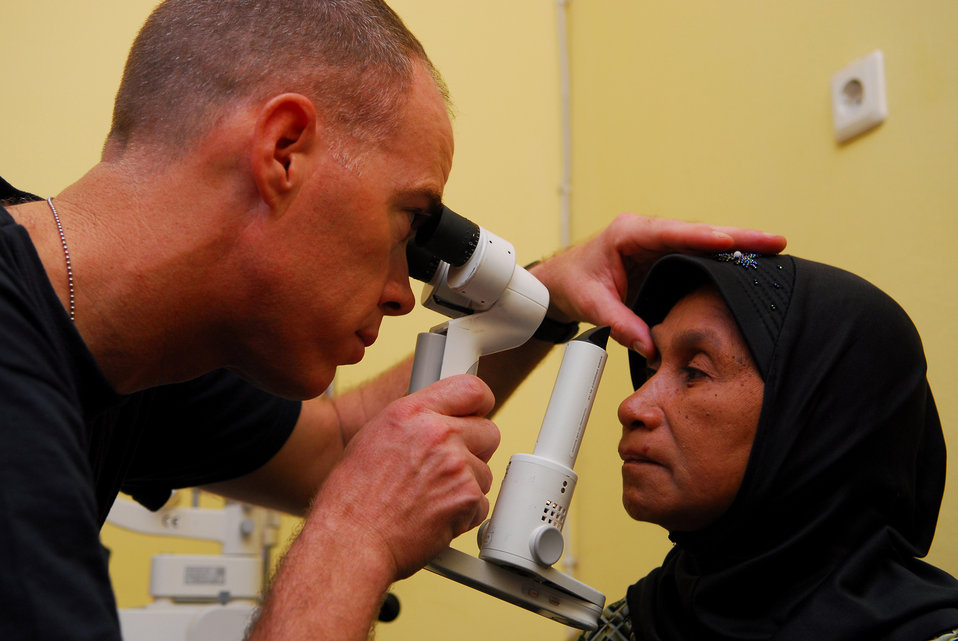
Cmdr. (Dr.) Kent Blade examines a patient’s eye during a surgery screening held at Ternate Hospital in Ternate, Indonesia, on July 18, 2010. The Military Sealift Command hospital ship USNS Mercy (T-AH 19) is in the North Maluku Islands conducting Pacific Partnership 2010, the fifth in a series of annual U.S. Pacific Fleet endeavors conducted in Indonesia as a disaster relief exercise aimed at strengthening regional partnerships.